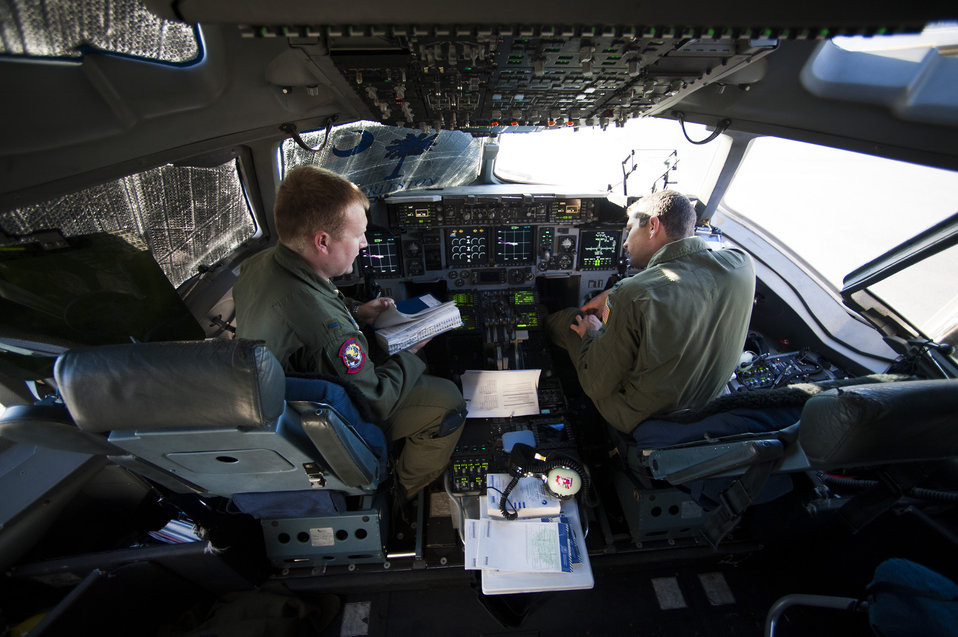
Hurricane Sandy relief

First Lt.’s Jonathan Taylor and Jeremy Roberts perform pre-flight checks before a mission to deliver aid to the Hurricane Sandy relief effort at Joint Base Charleston, S.C., Nov. 1, 2012. Taylor and Roberts are pilots with the 15th Airlift Squadron.